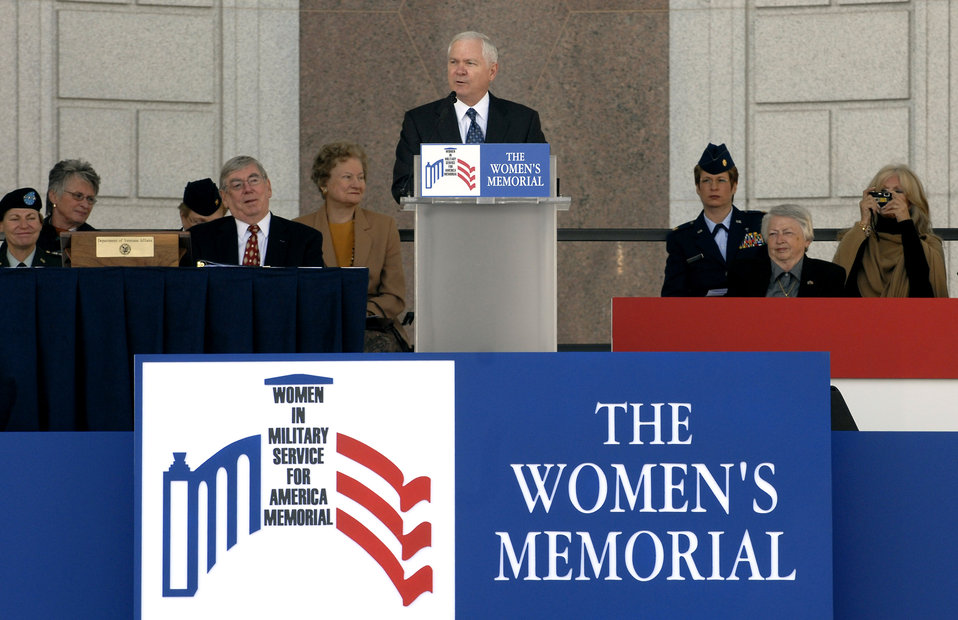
10th anniversary of WIMSA

Secretary of Defense Robert M. Gates addresses the crowd Nov. 3 during the ceremony celebrating the 10th anniversary of the Women in Military Service for America Memorial at Arlington National Cemetery.